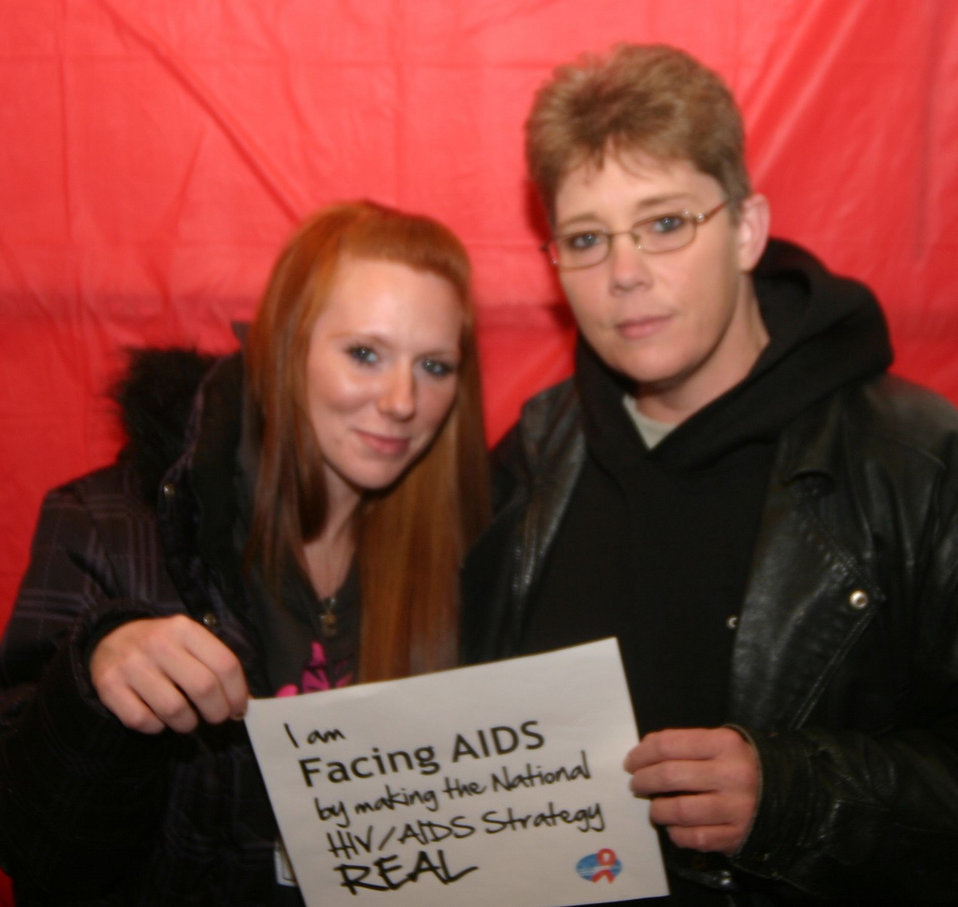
We are Facing AIDS through NHAS-02